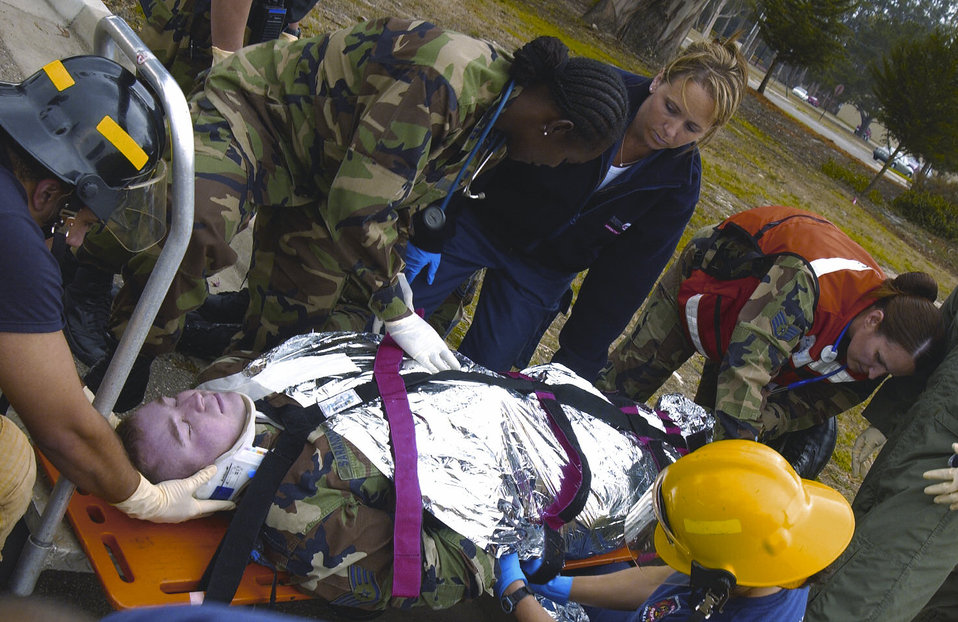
Cope Thunder

SALUA AIR STATION, India -- Senior director Capt. Michael Thomas (lower center), lead weapons director Tech. Sgt. Steven Harshman (lower left) and Indian Air Force Squadron Leader Rajesh monitor and direct aircraft from their